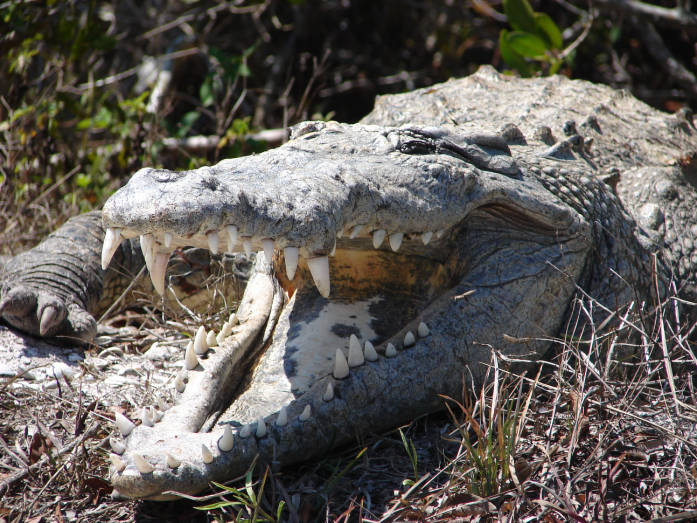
American crocodile, J.N. 'Ding' Darling National Wildlife Refuge